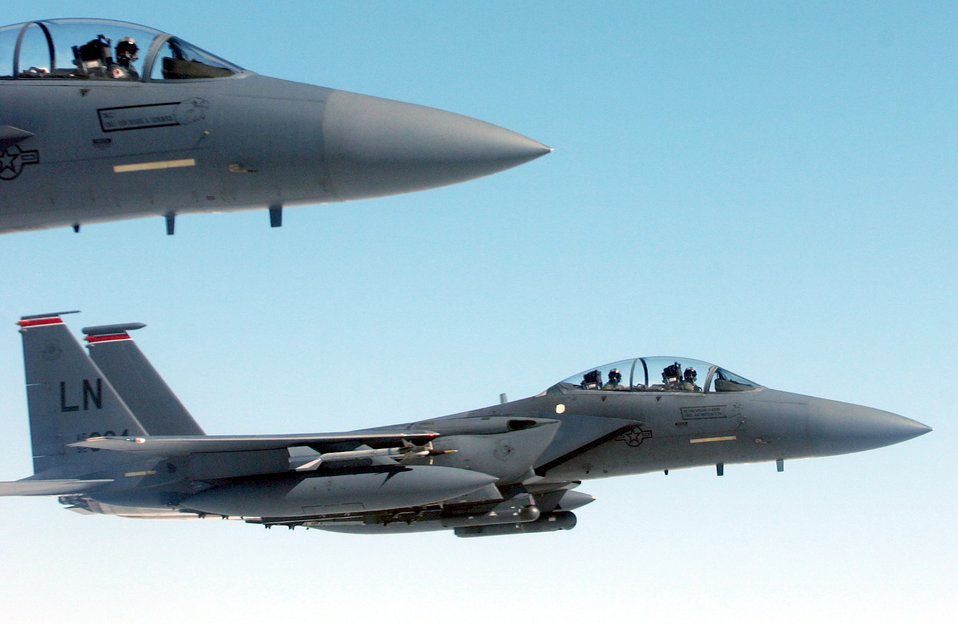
Eagles on a mission

OVER THE NORTH SEA -- Two F-15E Strike Eagles from the 494th Fighter Squadron at Royal Air Force Lakenheath, England, fly in formation during a training mission here July 19.